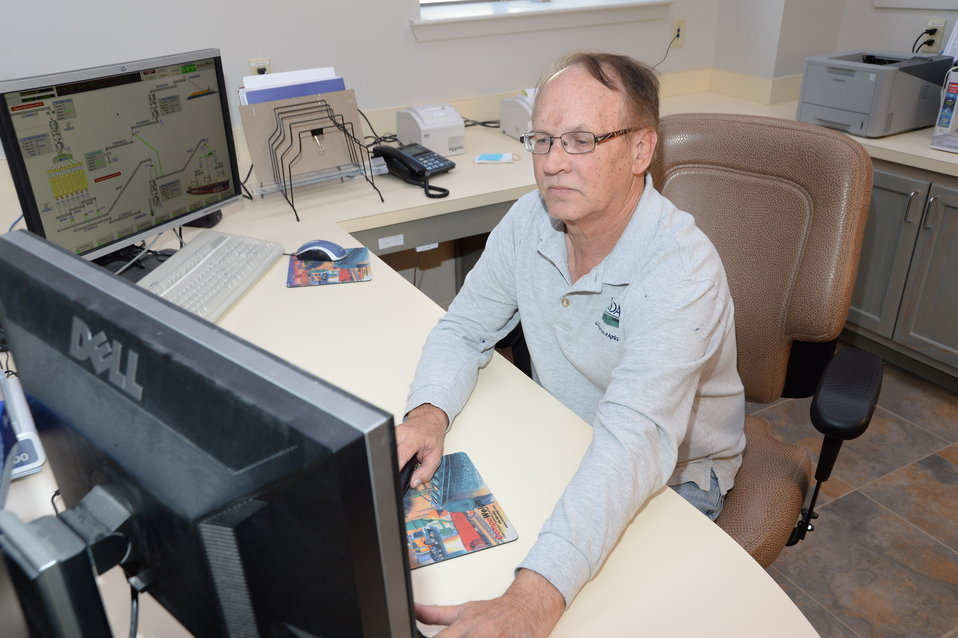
U.S. Department of Agriculture (USDA) Grain Inspection, Packers and Stockyards Administration (GIPSA) Federal Grain Inspection Service (FGIS) employee tracks shipments of grain ready for export near the Port of New Orleans in New Orleans, LA on Tuesday, Nov. 19, 2013.